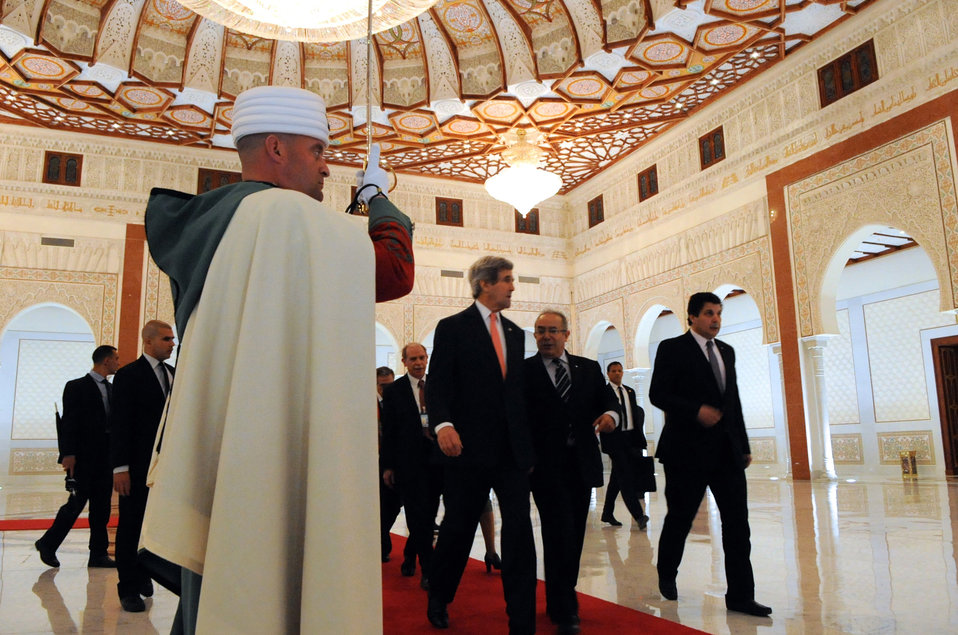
Secretary Kerry, Algerian Foreign Minister Lamamra Pass Through Honor Guard After Arrival Ceremony

U.S. Secretary of State John Kerry and Algerian Foreign Minister Ramtane Lamamra pass through an honor guard welcoming the Secretary upon his arrival in Algiers on April 2, 2014, for a Strategic Dialogue between the two countries.